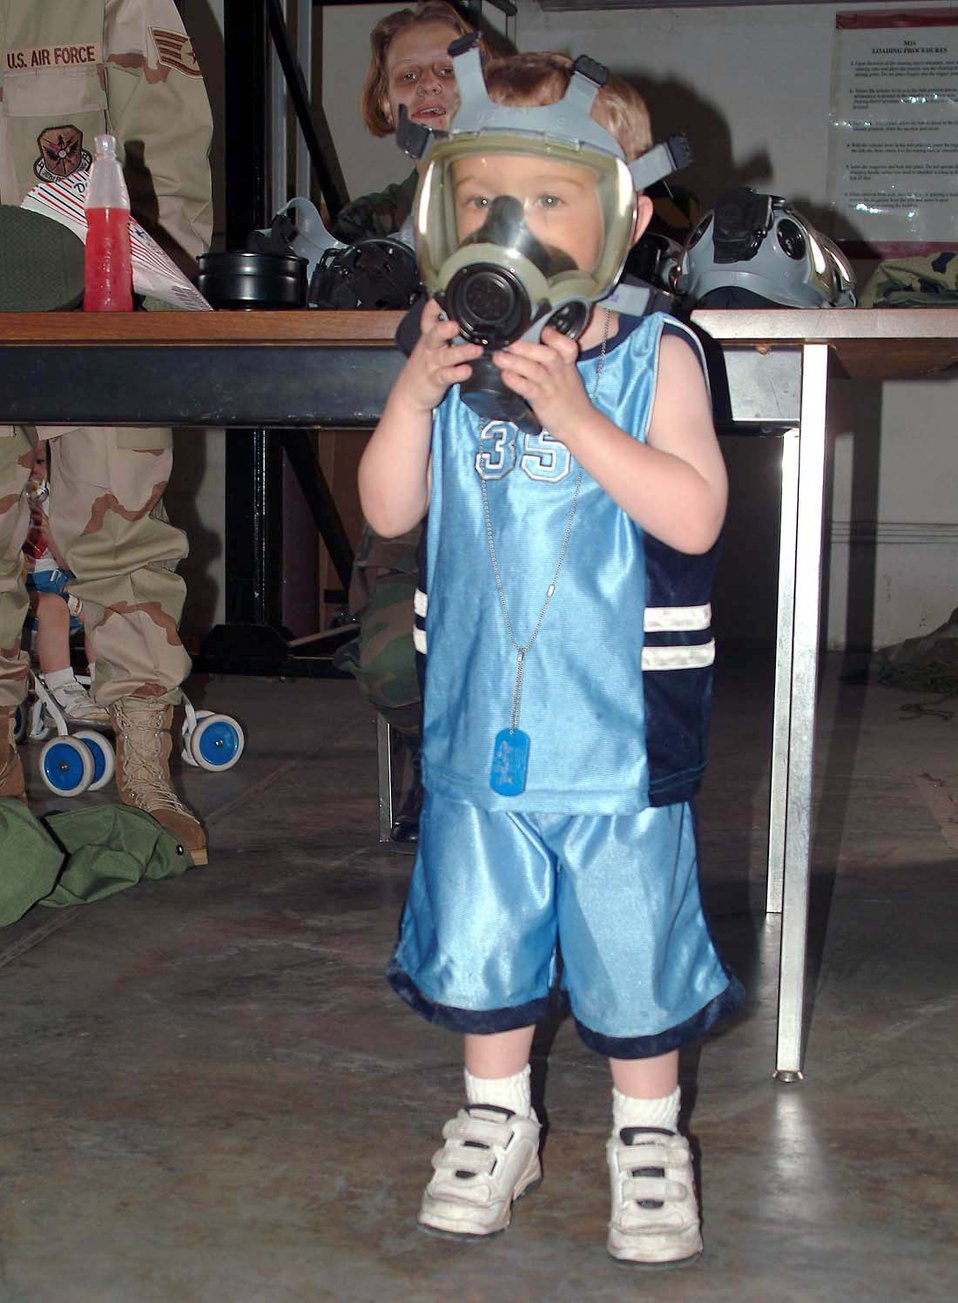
Only took me five seconds!

TINKER AIR FORCE BASE, Okla. -- Trevor Pelletier tries on a gas mask as he tours